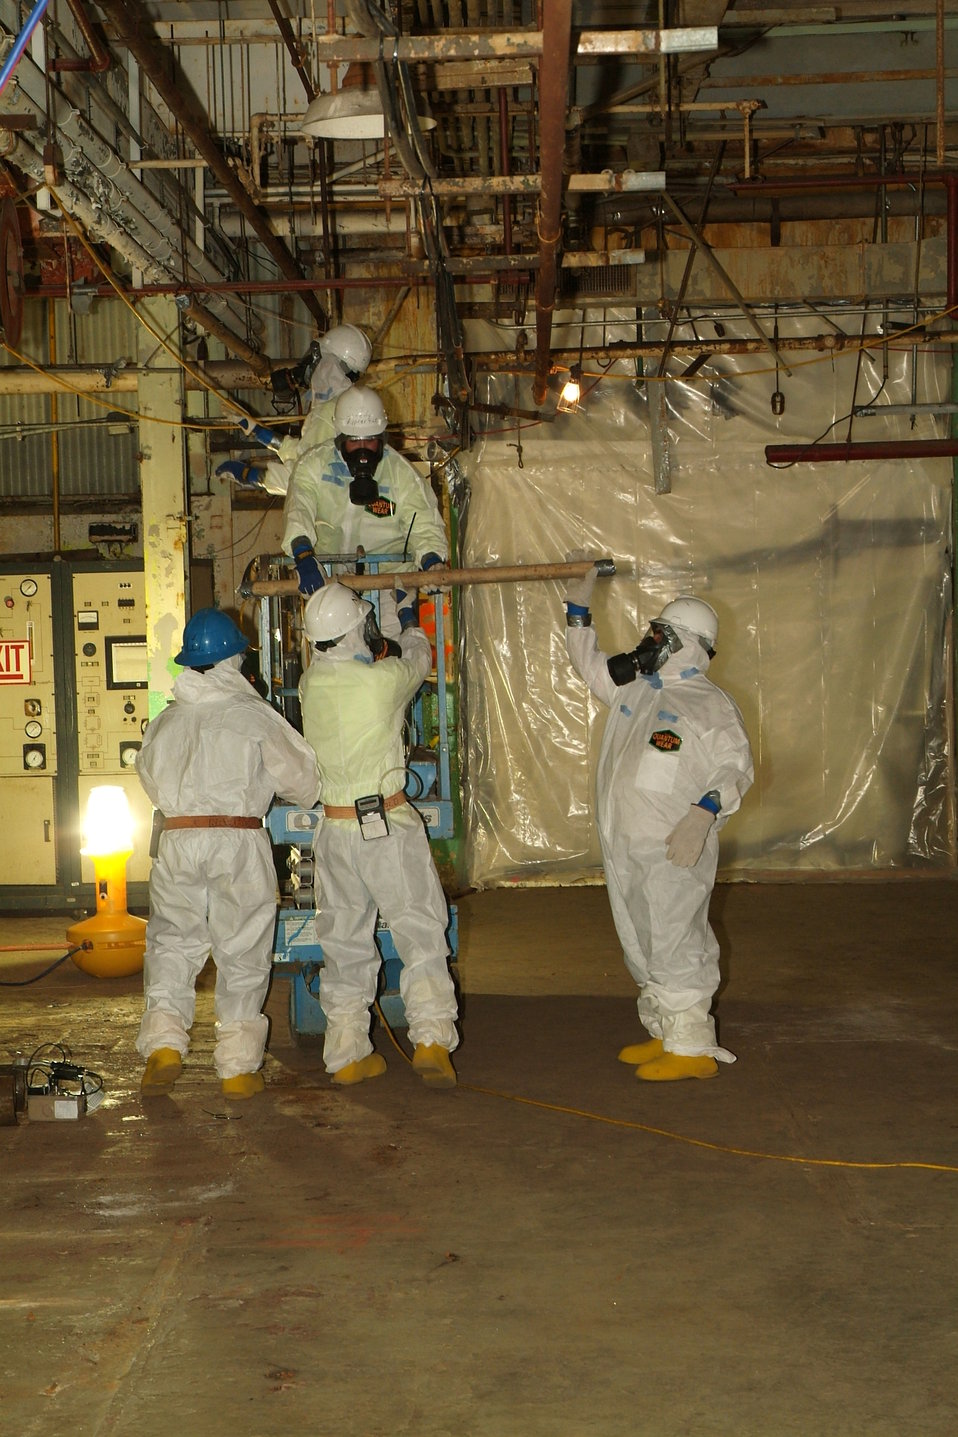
Paducah Asbestos Removal

Recovery Act workers remove asbestos from the C-410 Feed Plant to prepare it for demolition in late 2011 or early 2012.